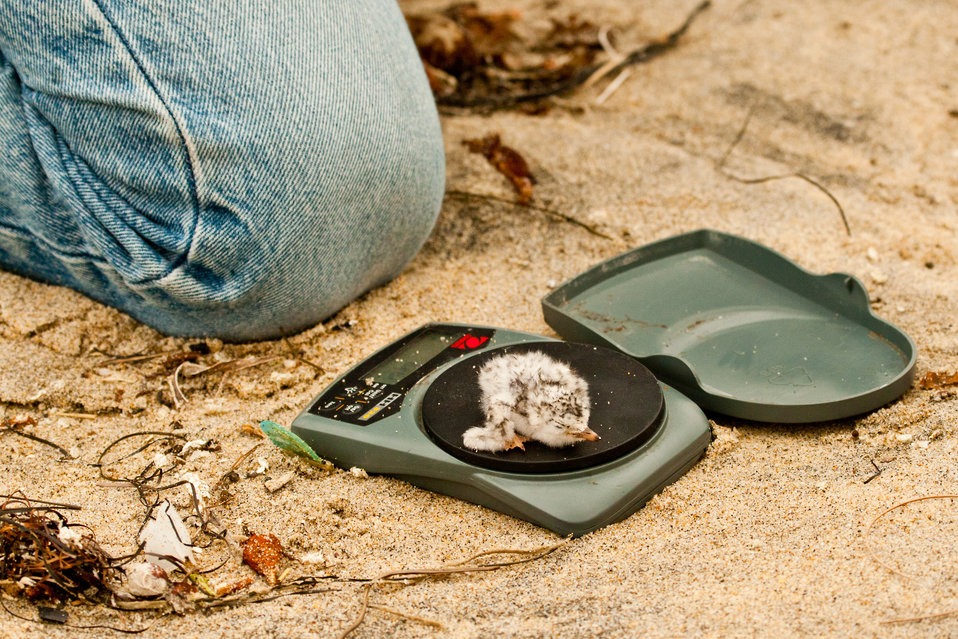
California least tern chick (CLT) gets weighed

Biologists regularly monitor CLT and Western snowy plover chicks throughout the breeding season from March to August.